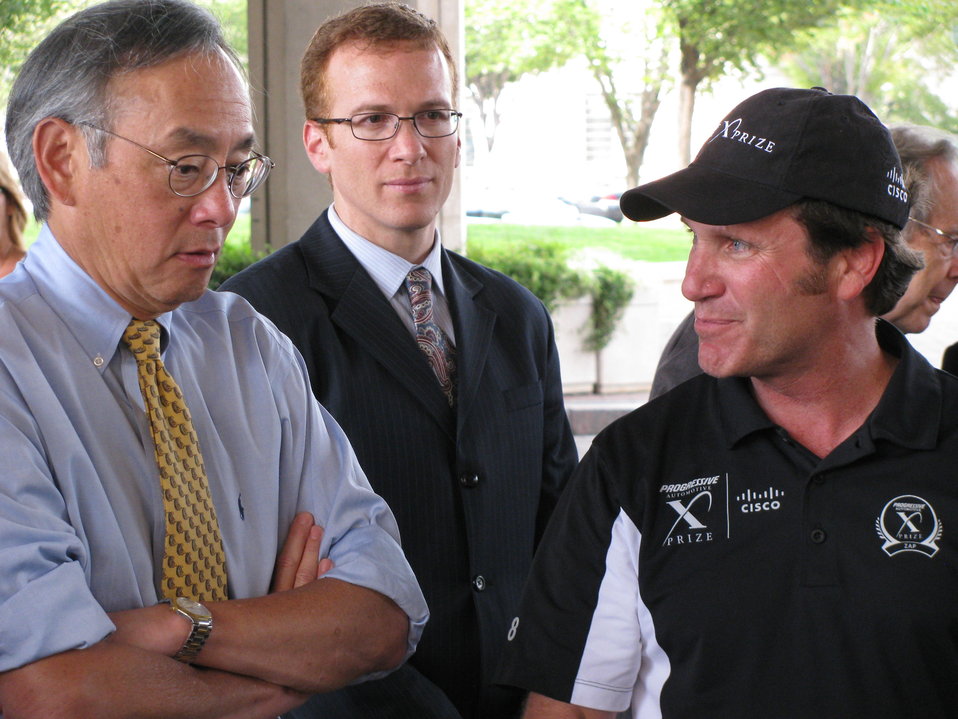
X Prize 021